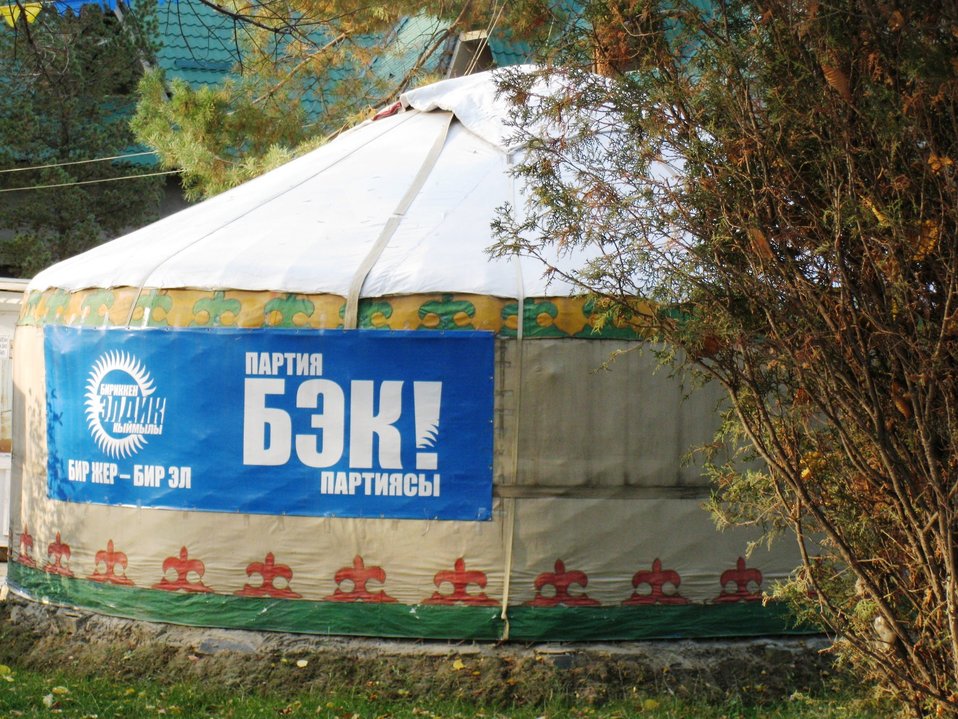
U.S. Embassy Bishkek Officers Travel Kyrgyzstan To Observe Elections

Foreign Service Officers from U.S. Embassy Bishkek travel Kyrgyzstan to observe polling stations and monitor the political and security situation in Kyrgyzstan in October 2010.